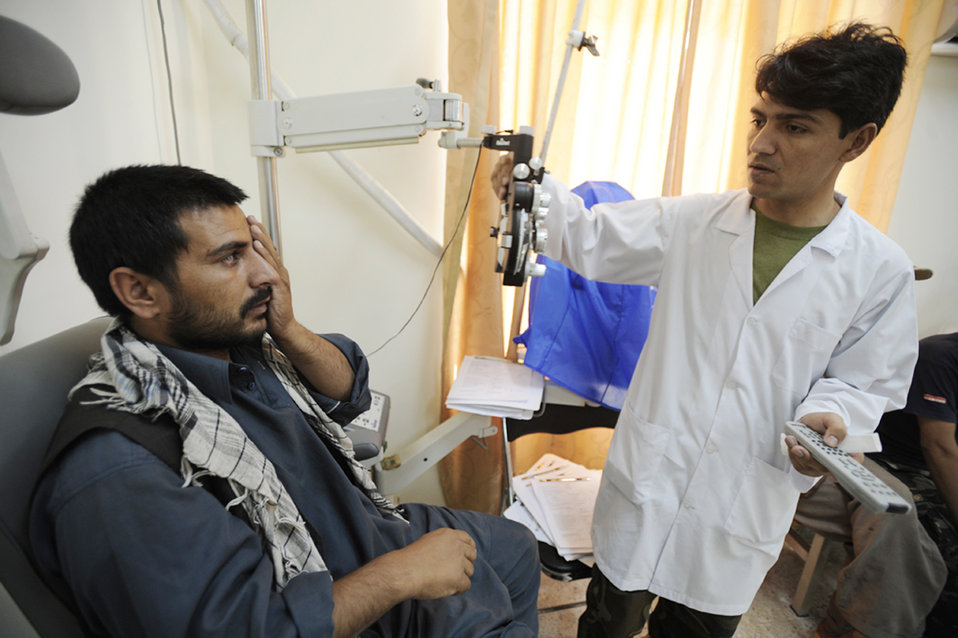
Airmen advise Afghan medical mission

A recruit for the Afghan national army has his vision screened during medical inprocessing Aug 2,2009 at the Kabul Military Training Center in Afghanistan. The medical screening process consists of a drug urinalysis, physical screening and eye exam.